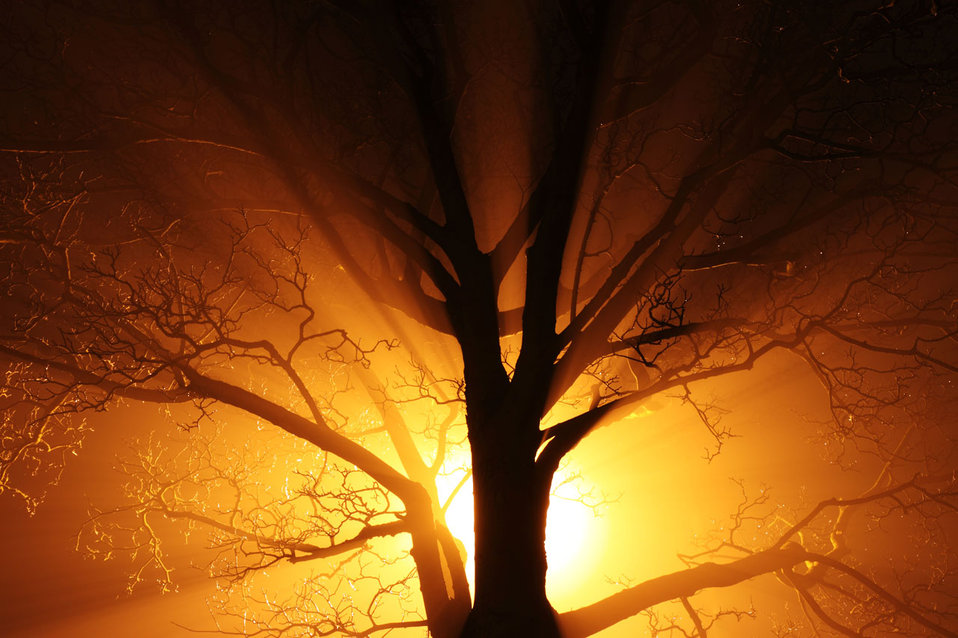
Rays of light

Tree in fog at night.